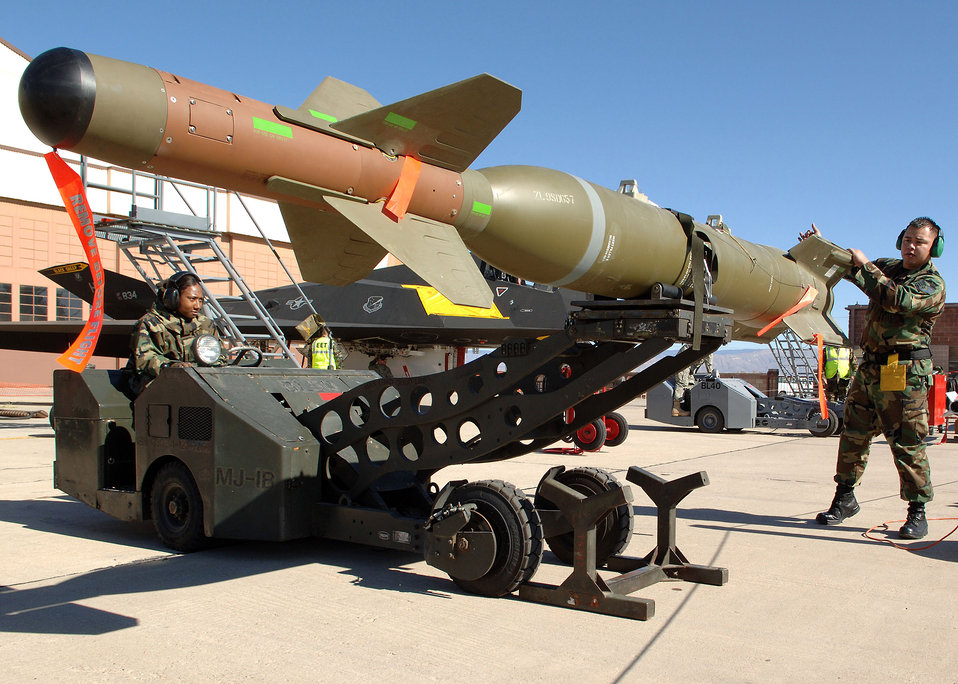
Holloman weapon loaders compete for last time on F-117

Senior Airman Arinda Murphy and Staff Sgt. Jose Cortez move a bomb unit-27 from its stand during F-117 Nighthawk Weapons Load Crew of the Year Competition Jan. 18 at Holloman Air Force Base, N.M. The competition is the last of its kind for the F-117. Airman Murphy and Sergeant Cortez are assigned to the 49th Aircraft Maintenance Squadron.